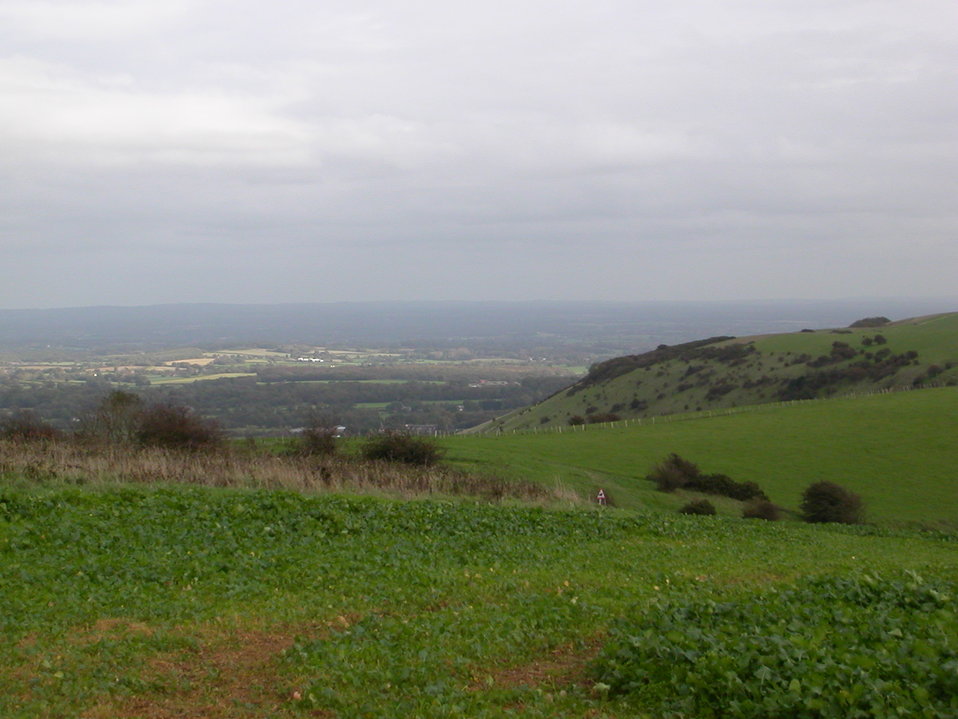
View to the north-east from summit of Ditchling Beacon.